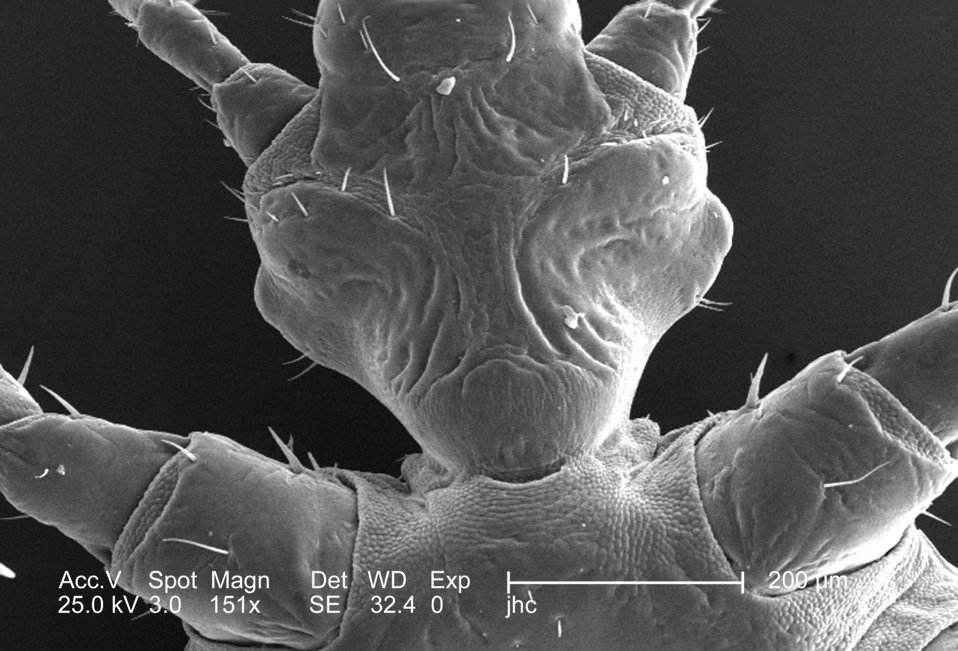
From a ventral perspective, and at a low magnification of 151x, this 2006 scanning electron micrograph (SEM) depicted an enlarged view of the chitinous, exoskeletal surface of a female louse, Pediculus humanus var. corporis, in the region where the organism's forelegs and hean attached to its thoracic region. In this particular view, the exoskeleton seems to be composed of interlocking plates, which is not far from the case, in order to provide flexibility to this patent joint, the chitinous components were arranged in a plate-like manner, attached to one another with thin, by strong layers of exoskeletal chitin. Chitin is a molecule made up of bound units of acetylglucosamine, which is joined in such a way as to allow for increased points at which hydrogen bonding can occur. In this way chitin provides increased strength, and durability as an exoskeletal foundation.